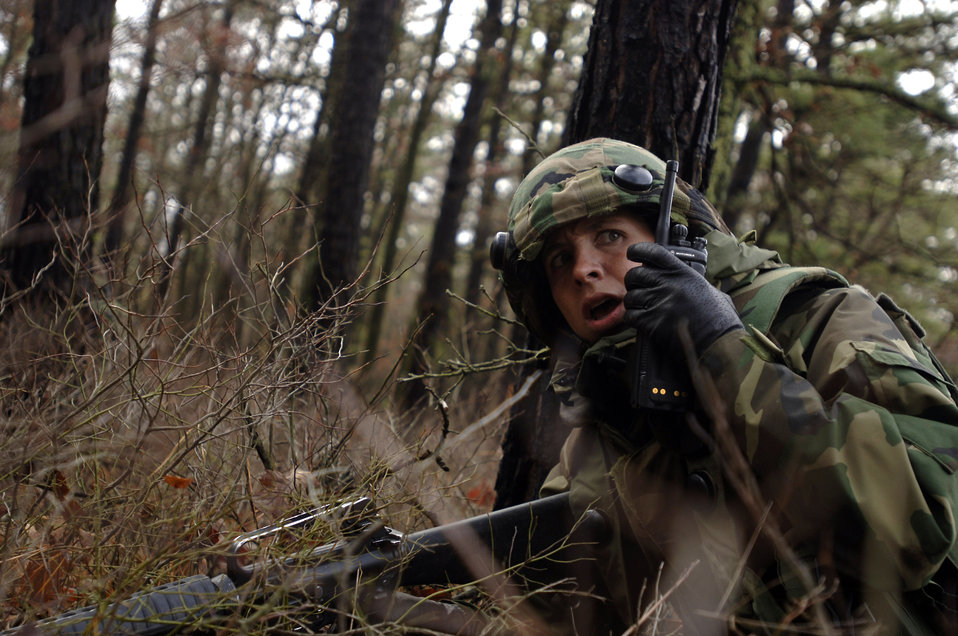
Air Force training makes Airmen safer, more aware

Maj. Cristen Lesperance radios in coordinates of simulated insurgents while under fire during the Contingency Skills Training course at the Air Mobility Warfare Center in Fort Dix, N.J., Nov. 14.